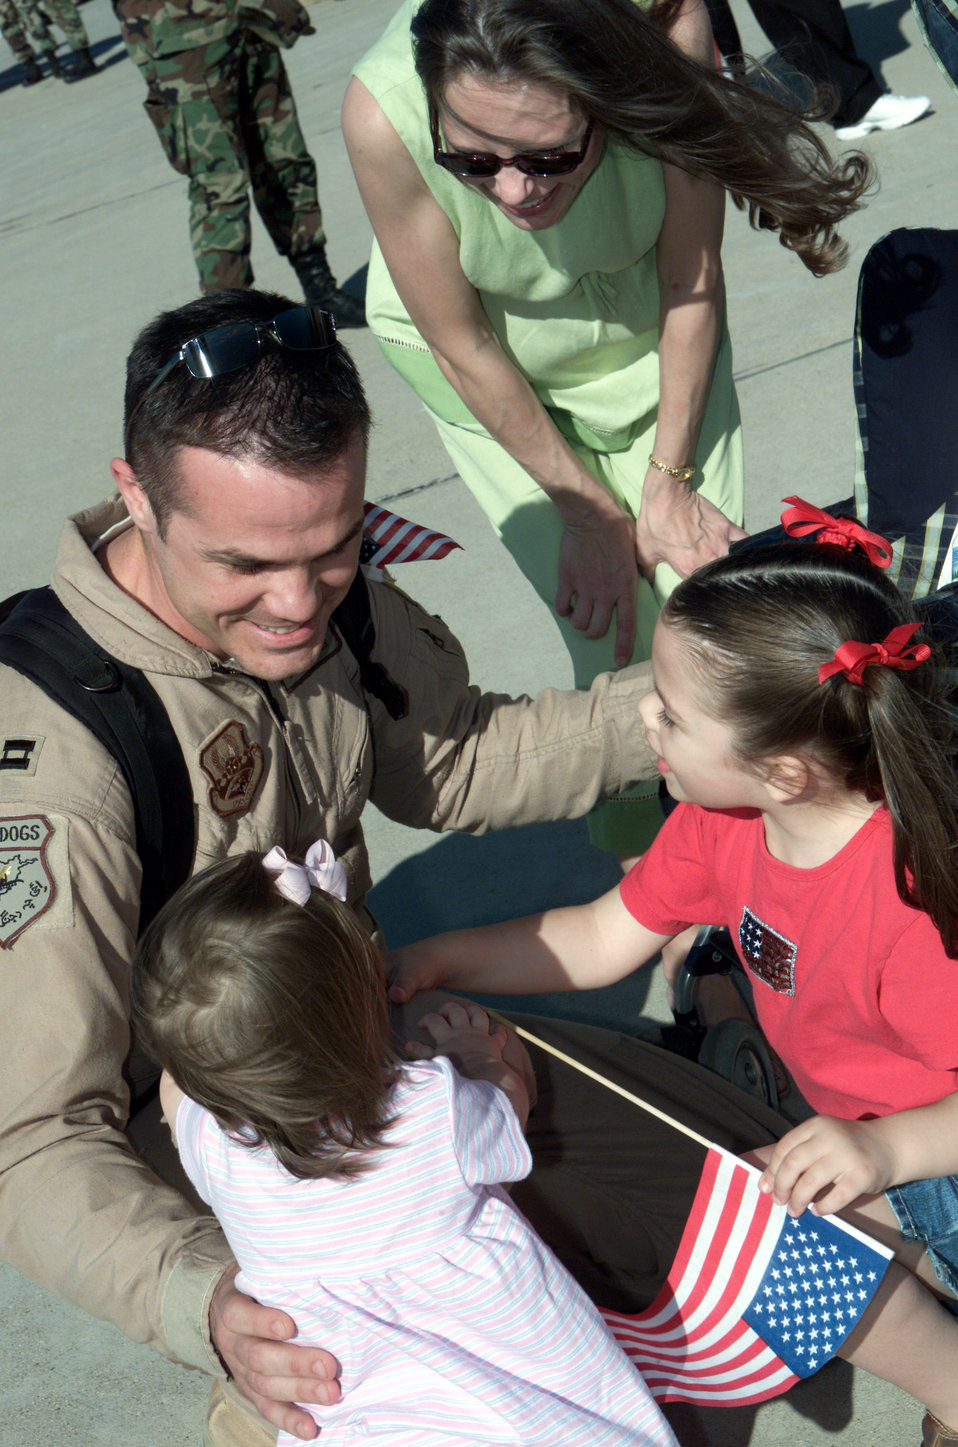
Back home again

DAVIS-MONTHAN AIR FORCE BASE, Ariz. -- Capt. Brian Gross watches eagerly as his wife, Heather, tries to get their youngest daughter, Abby, to say